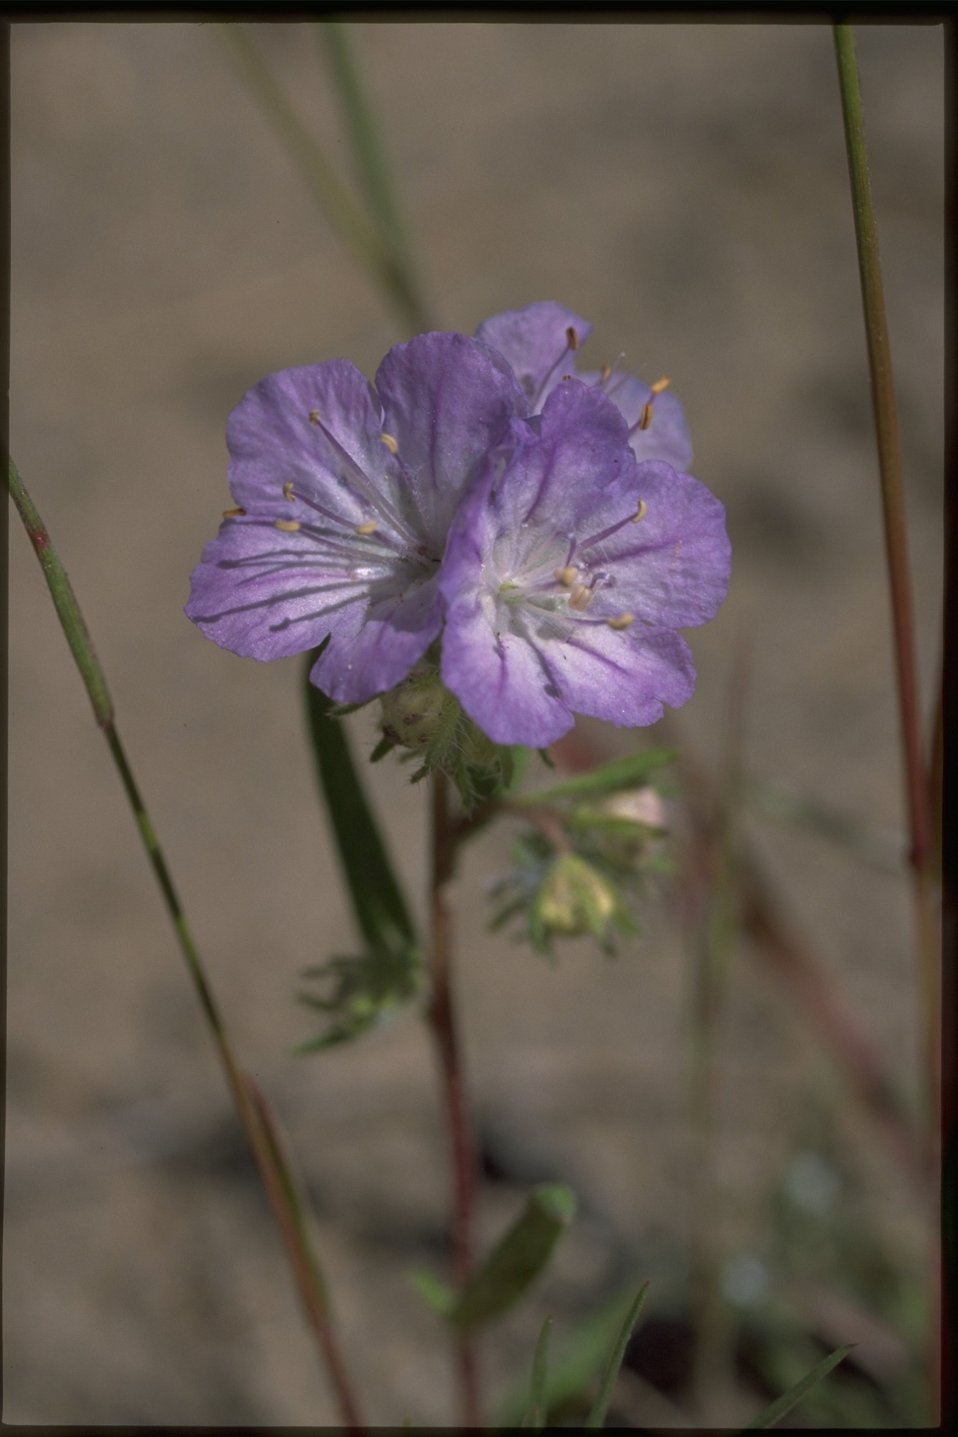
Closeup shot of Phacelia.